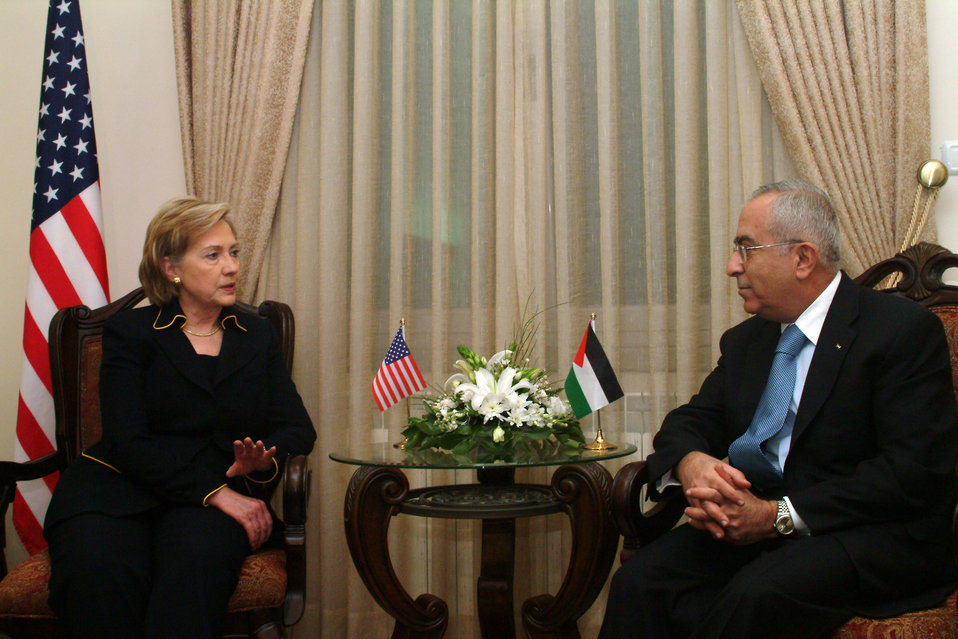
Secretary Clinton With Palestinian Prime Minister

Secretary Clinton with Palestinian Authority Prime Minister Salam Fayad in Ramallah March 4, 2009.